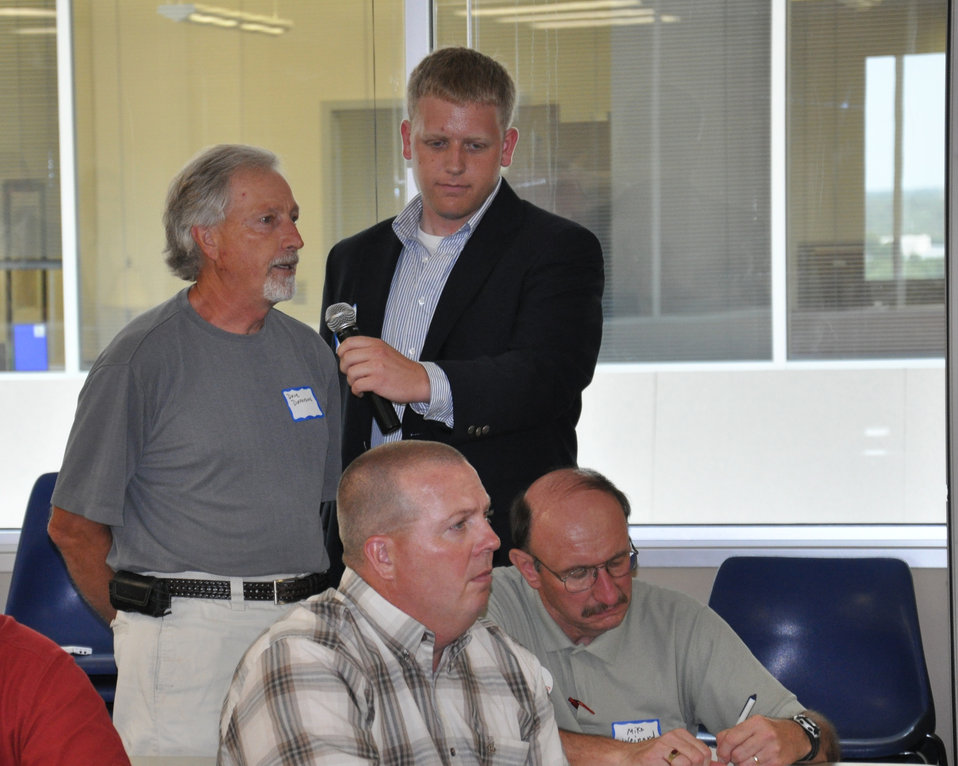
A member of the audience asks Agriculture Secretary Tom Vilsack and Congressman Bruce Braley a question during a listening session in Maquoketa and Cedar Rapids, Iowa, on Monday, June 11, 2012. They discussed the upcoming Food, Farm and Jobs Bill and highlighted how agriculture is helping create jobs and grow the economy.